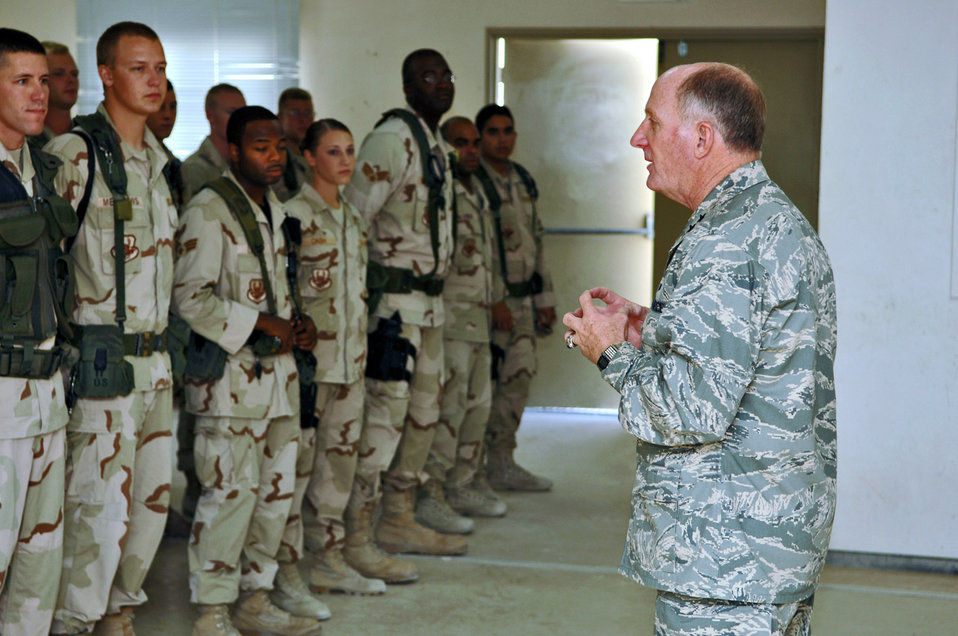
Chief of chaplains visits 379th AEW

Chaplain (Maj. Gen.) Charles Baldwin, Air Force chief of chaplains, discusses spiritual health with Airmen deployed to the 379th Expeditionary Security Forces Squadron in Southwest Asia Aug. 13.